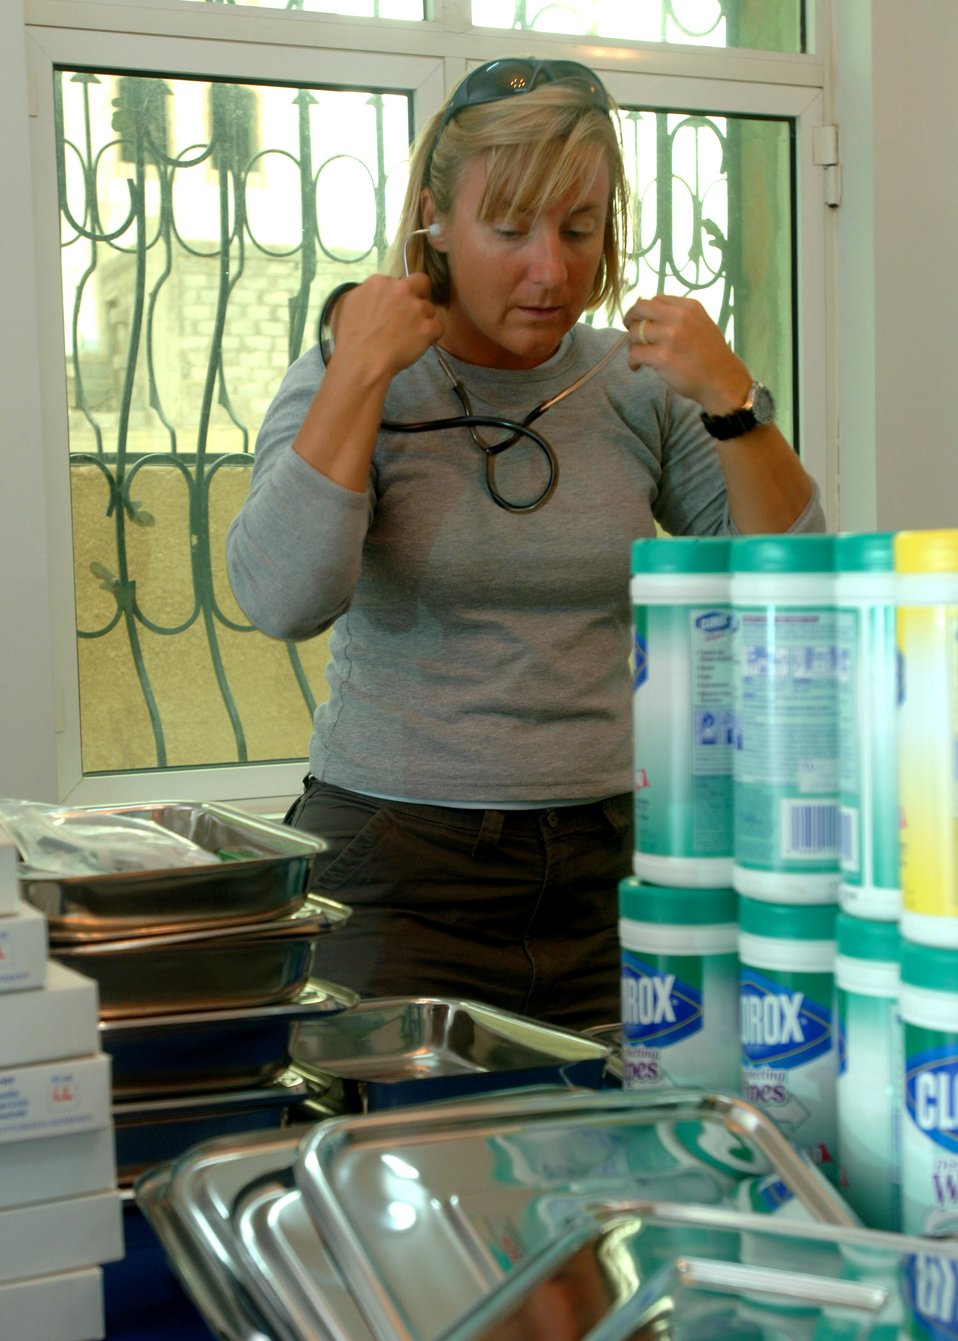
Veterinary project has big impact on small island

Army Capt. Gwynne Kinley, a doctor of veterinary medicine, checks to ensure a stethoscope is working properly before adding it to a medical bag in Sana'a, Yemen. The supplies were used during a veterinary civic action project on the small island of Socotra. Captain Kinley is the mission commander of the Combined Joint Task Force-Horn of Africa.